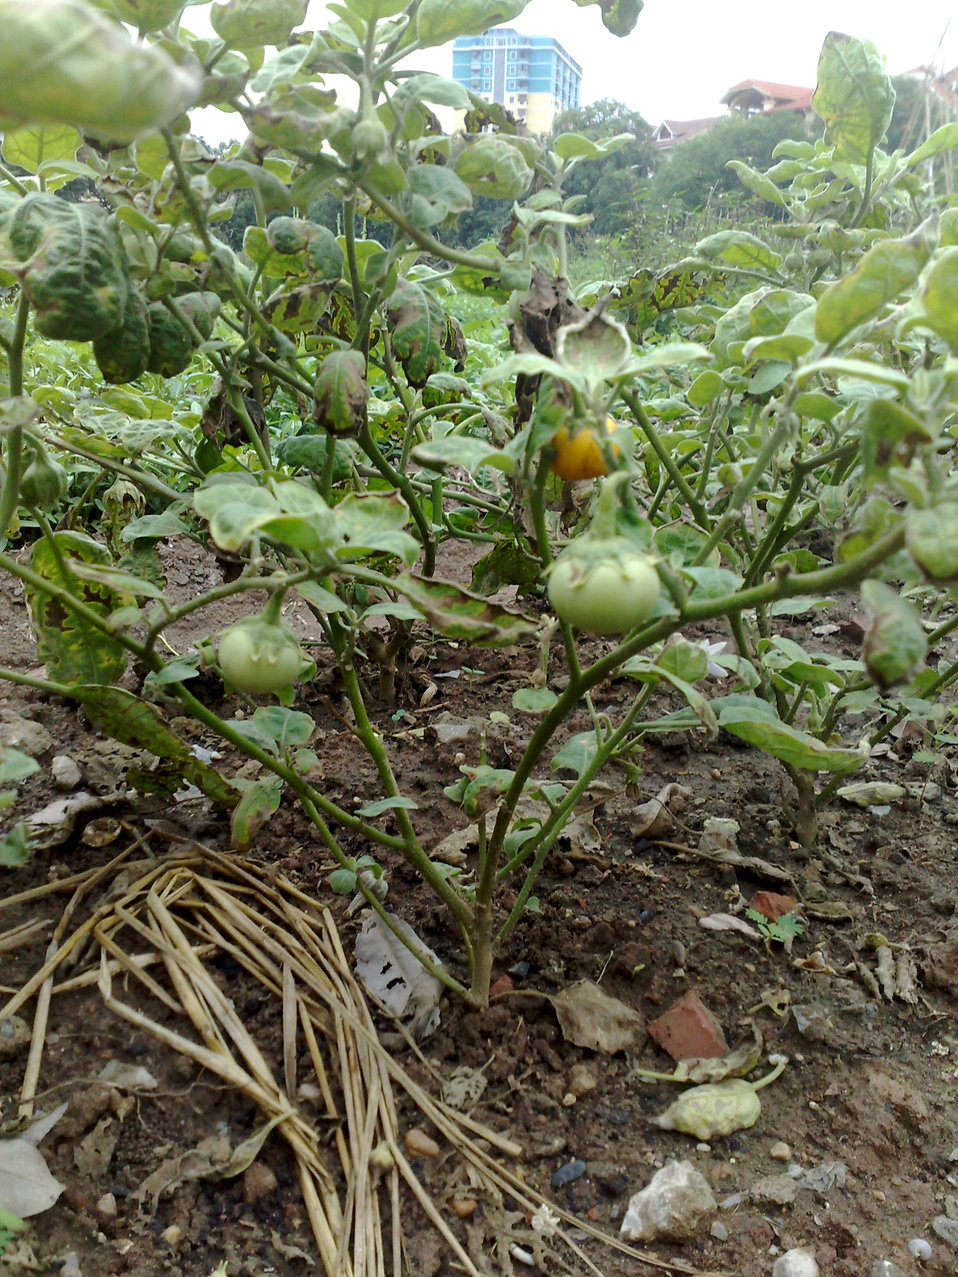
Tiếng Việt: Hình cây cà pháo do tôi tự chụp và tải lên để minh hoạ cho bài viết Cà pháo.